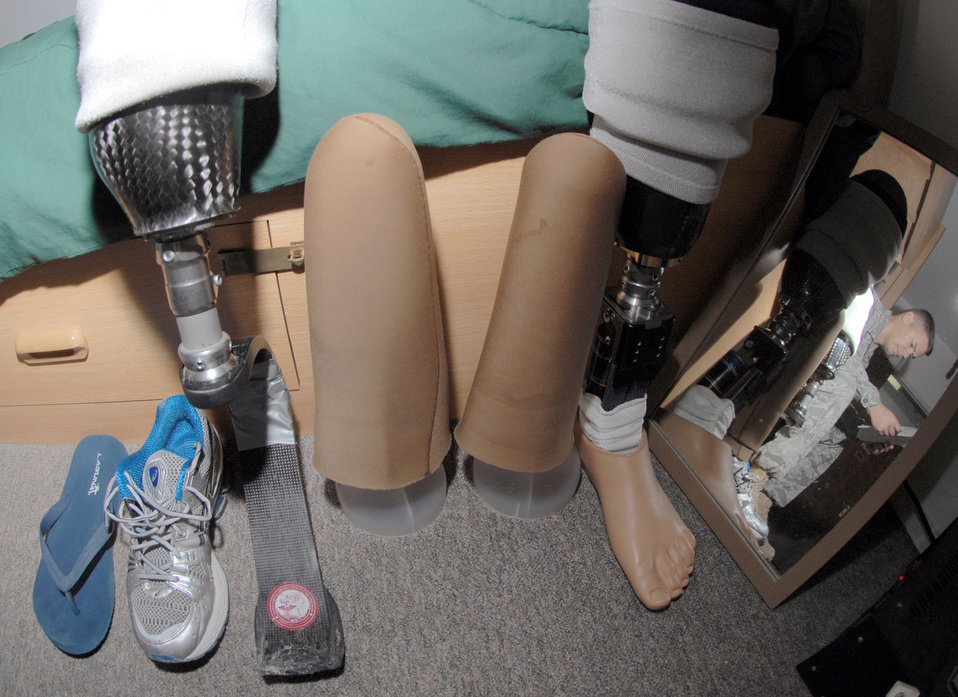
Air Force amputee returns to Southwest Asia, spends holidays in AOR

SOUTHWEST ASIA -- Single shoes and prosthetics line Tech. Sgt. Christopher Ramakka's bed in his dormitory room here Dec. 24. Sergeant Ramakka, refelcted in the mirror, is the flight chief from the 380th Expeditionary Civil Engineer Explosive Ordnance Flight, reads over some draft paperwork after work. The Richland, Wash., native is serving his debut deployment after losing his lower left leg when he stepped on a mine in Afghanistan three years ago. He also lost the tips of two fingers and suffered further damage to his hands and right leg. Sergeant Ramakka is depoyed from Lackland Air Force Base, Texas.